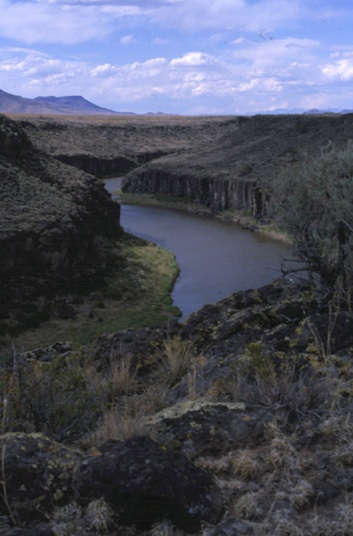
Scenic of the Rio Grande